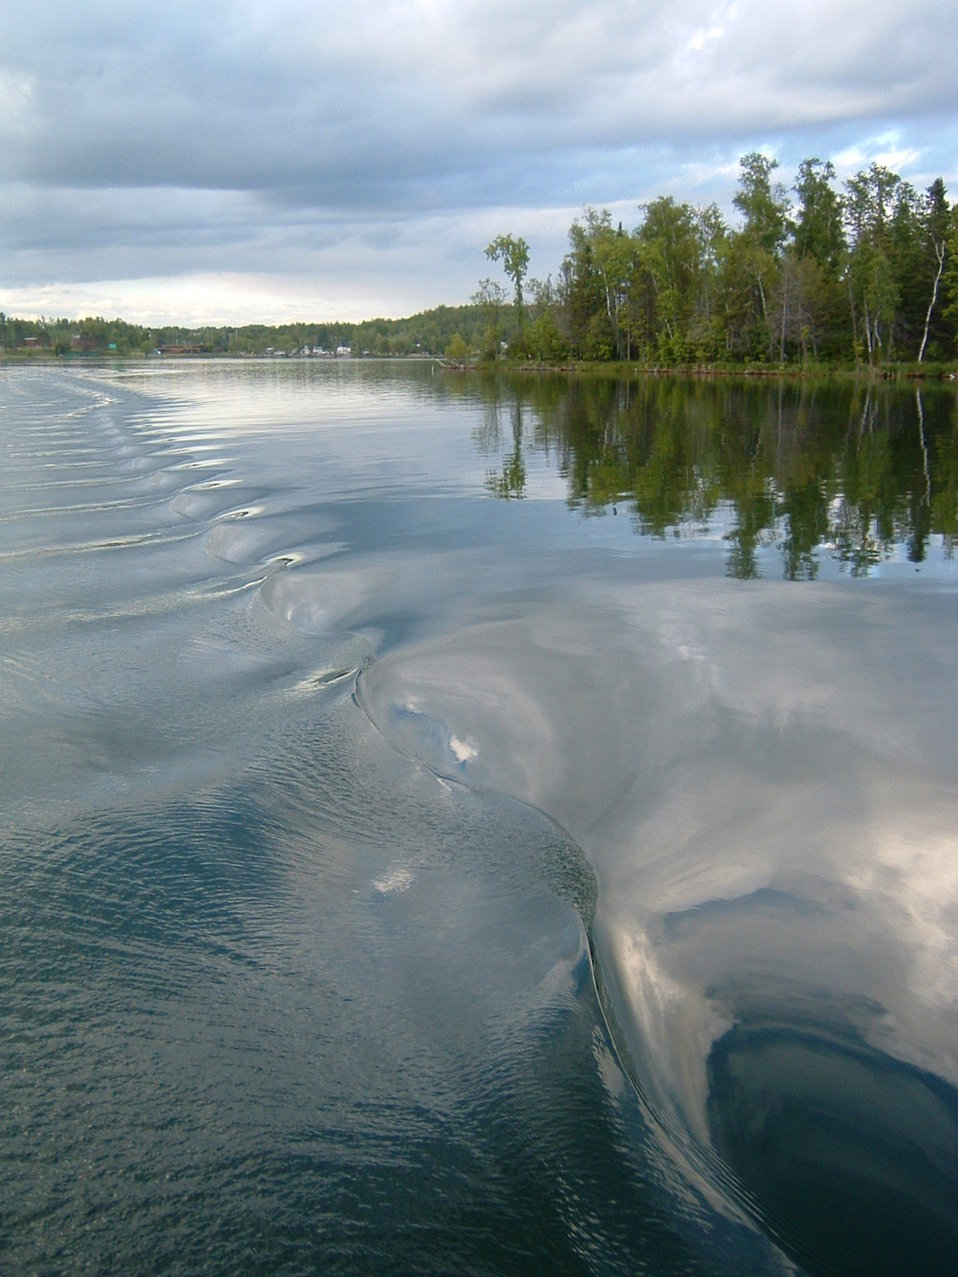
Uploaded by request of Joan Barle

Taken on Trout Lake in Coleraine, Minnesota, a small town in northern Minnesota